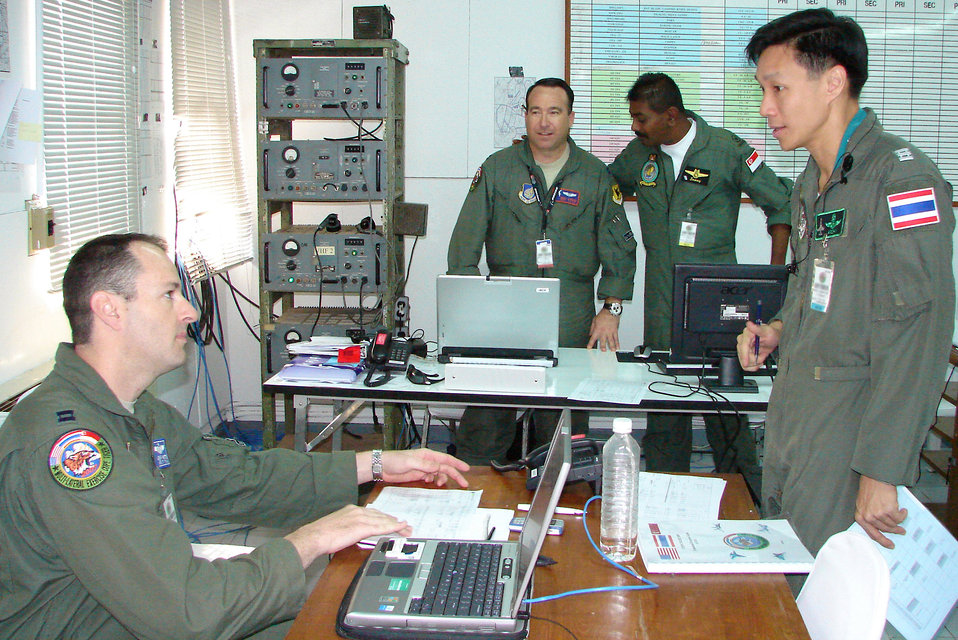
Exercise in Thailand shows multilateral partnership

Capt. Jeff Watts (left to right), Capt. Paul Lankes, Singapore Warrant Officer Naranasamy Samyual and Royal Thai air force Wing Commander Arnon Charusombat discuss the Cope Tiger 2009 flying schedule in the live fly cell March 11 at Korat Royal Thai air force base, Thailand. Cope Tiger is an annual, multilateral large force aerial exercise conducted in Thailand including U.S., Thai and Singaporean military forces.